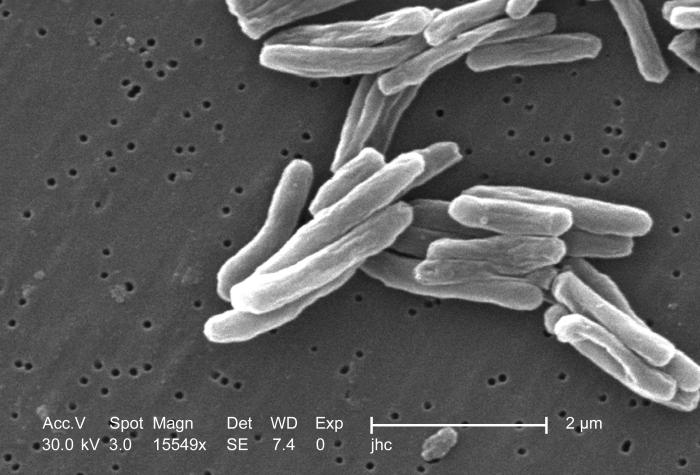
Under a high magnification of 15549x, this scanning electron micrograph (SEM) depicted some of the ultrastructural details seen in the cell wall configuration of a number of Gram-positive Mycobacterium tuberculosis bacteria. As an obligate aerobic organism M. tuberculosis can only survive in an environment containing oxygen. This bacterium ranges in length between 2 - 4 microns, and a width between 0.2 - 0.5 microns. See PHIL 9997 for a colorized version of this image.